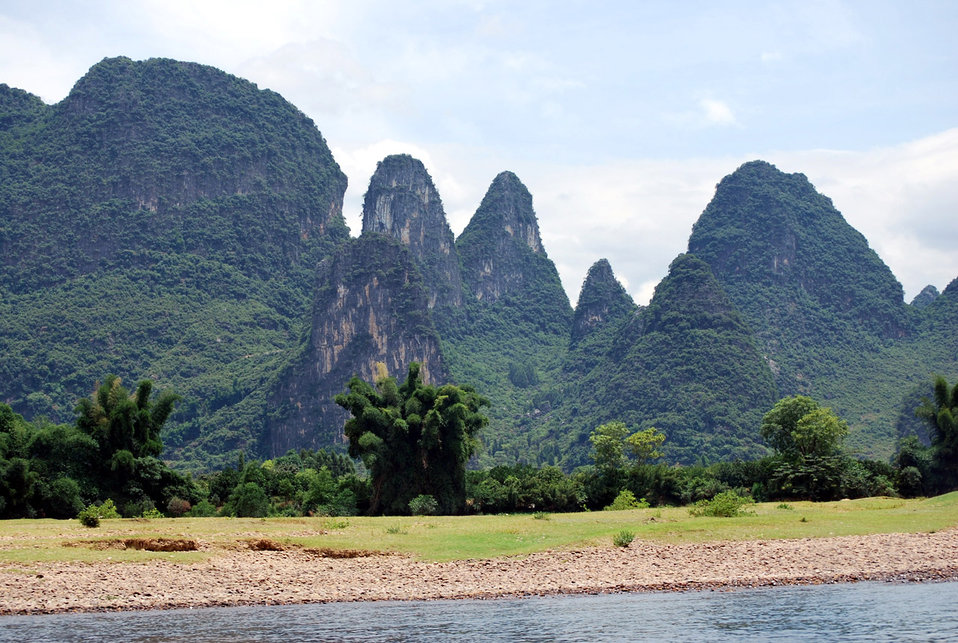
Scenery of lijiang river and mountains guilin,china.